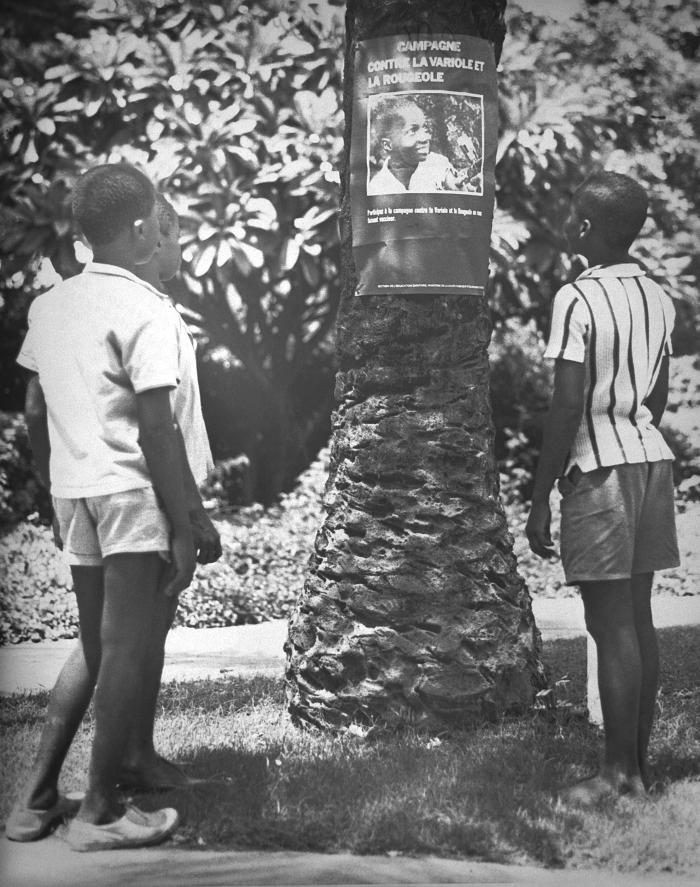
These children are reading a poster used to notify the people of Mali about the country's 1960s Smallpox Eradication campaign.